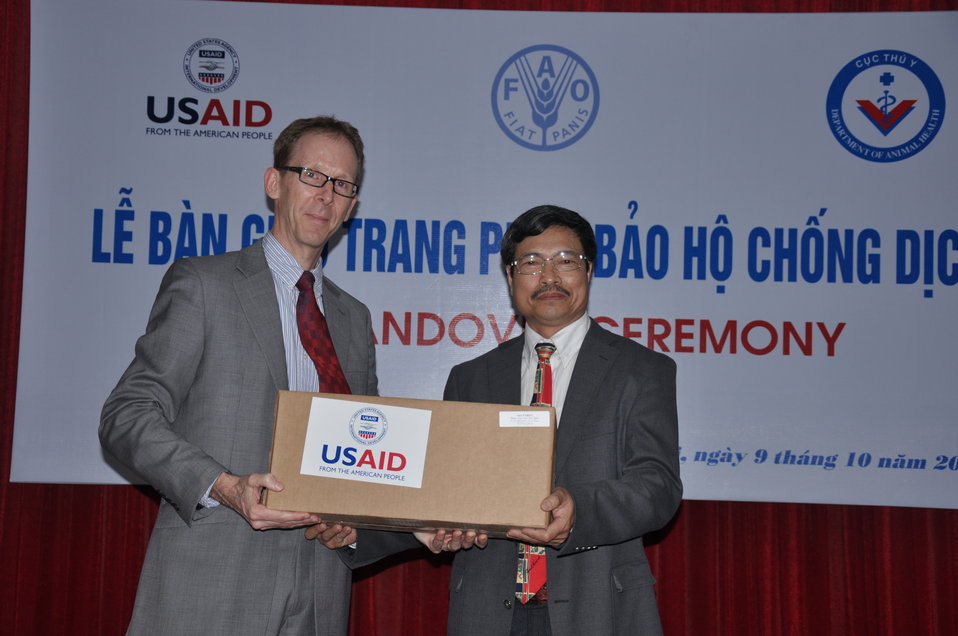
USAID Mission Director Joakim Parker, left, and Director General of Vietnam's Department of Animal Health, Dr. Pham Van Dong at the Protective Gear Handover Ceremony

Handover of personal protective equipment event in Hanoi.